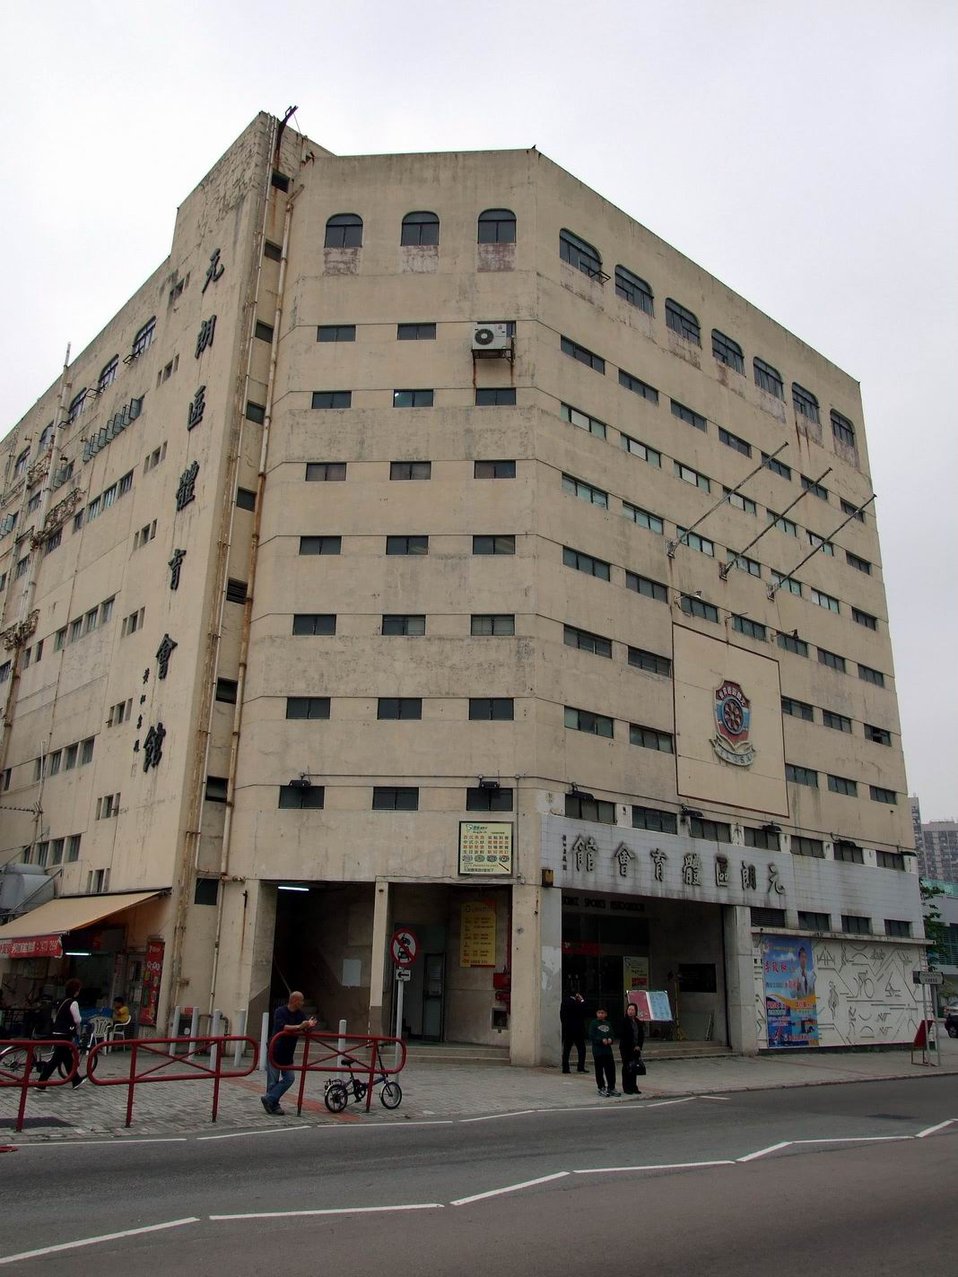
元朗區體育會館